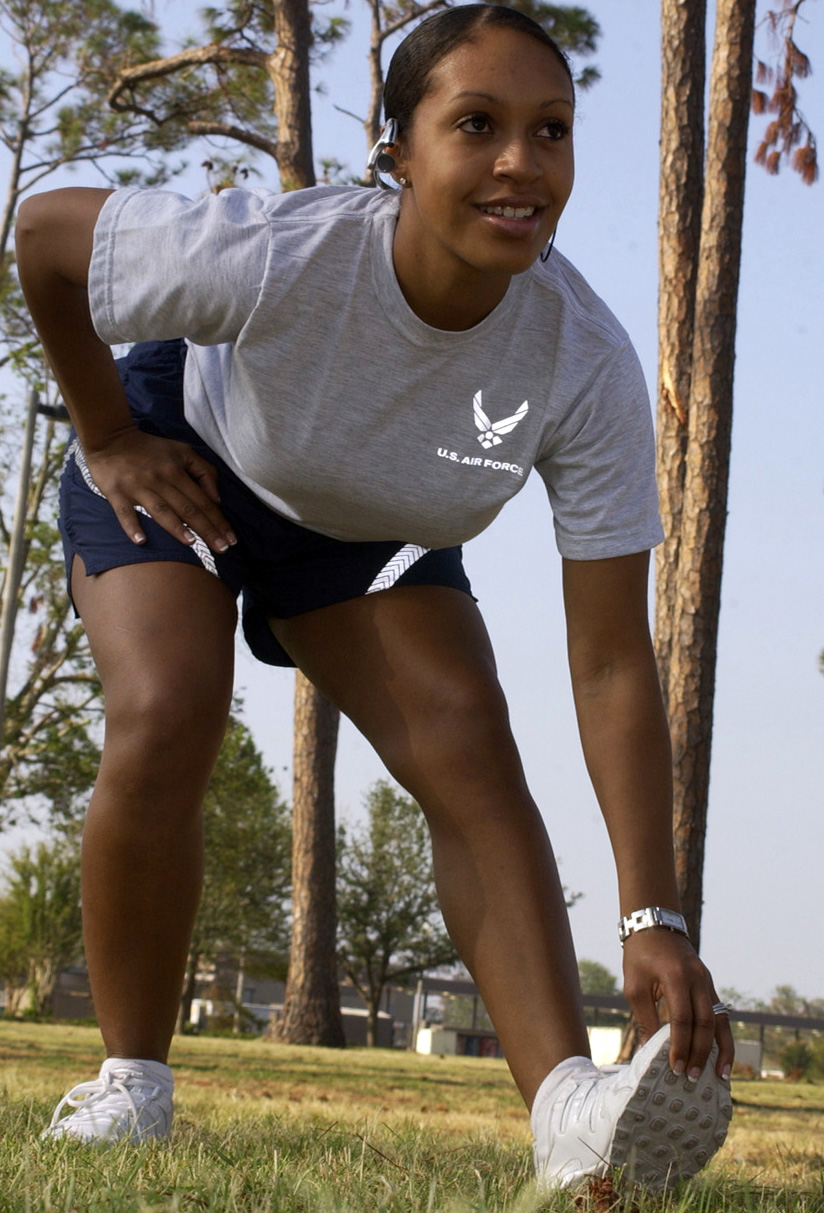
Proper headphone wear

KEESLER AIR FORCE BASE, Miss. (AFPN) -- Senior Airman Lizeth Abreu demonstrates proper wear of headphones while stretching in PT gear. Headphones are authorized during personal PT time and other off-duty activities, but not while in formation or during organized unit PT sessions.